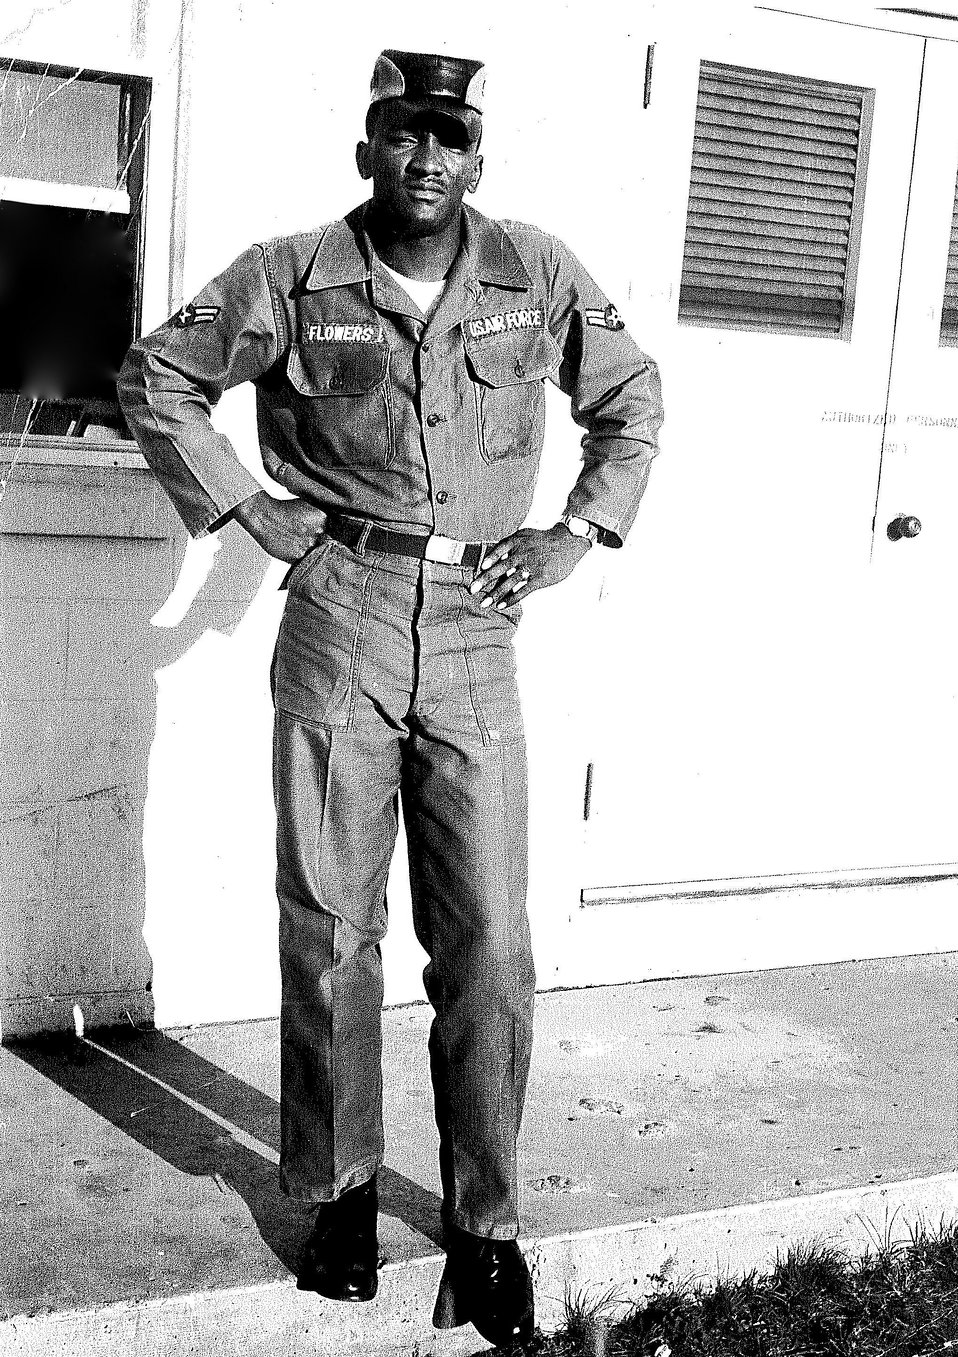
Gen. Alfred Flowers

Then-Airman 1st Class Alfred Flowers at Da Nang Air Base, Vietnam, in 1968.